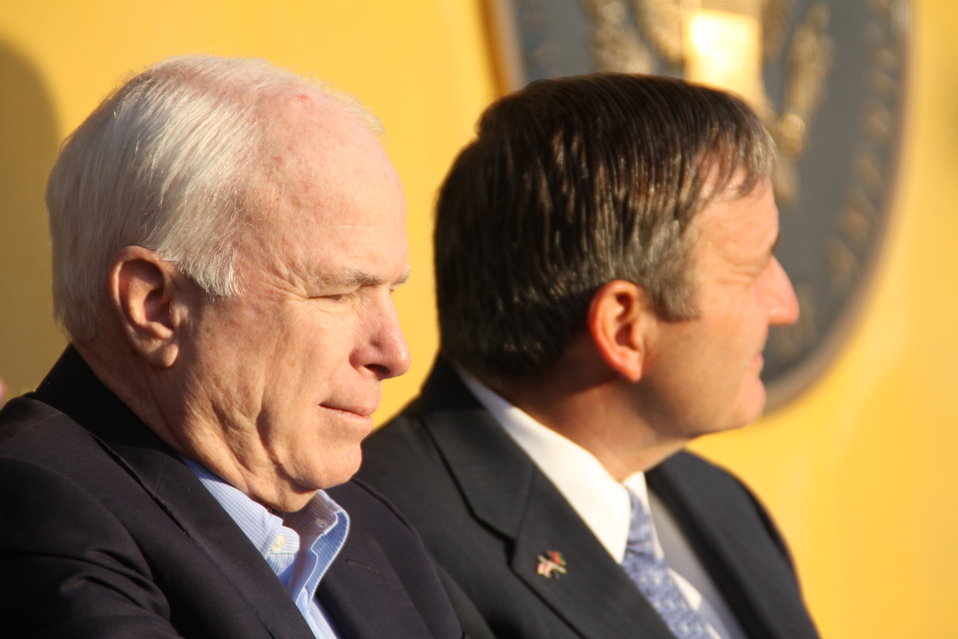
Senator McCain and Ambassador Eikenberry